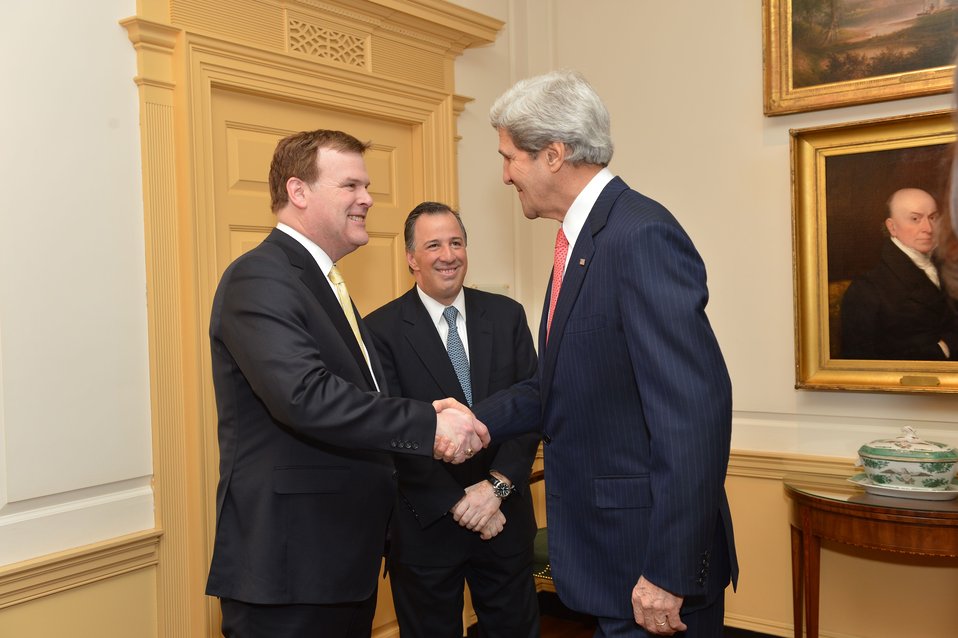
Secretary Kerry Shakes Hands With Canadian Foreign Minister Baird

With Mexican Foreign Secretary Jose Antonio Meade looking on, U.S. Secretary of State John Kerry shakes hands with Canadian Foreign Minister John Baird as they meet for the North America Trilateral Ministerial at the U.S. Department of State in Washington, D.C., on January 17, 2014.